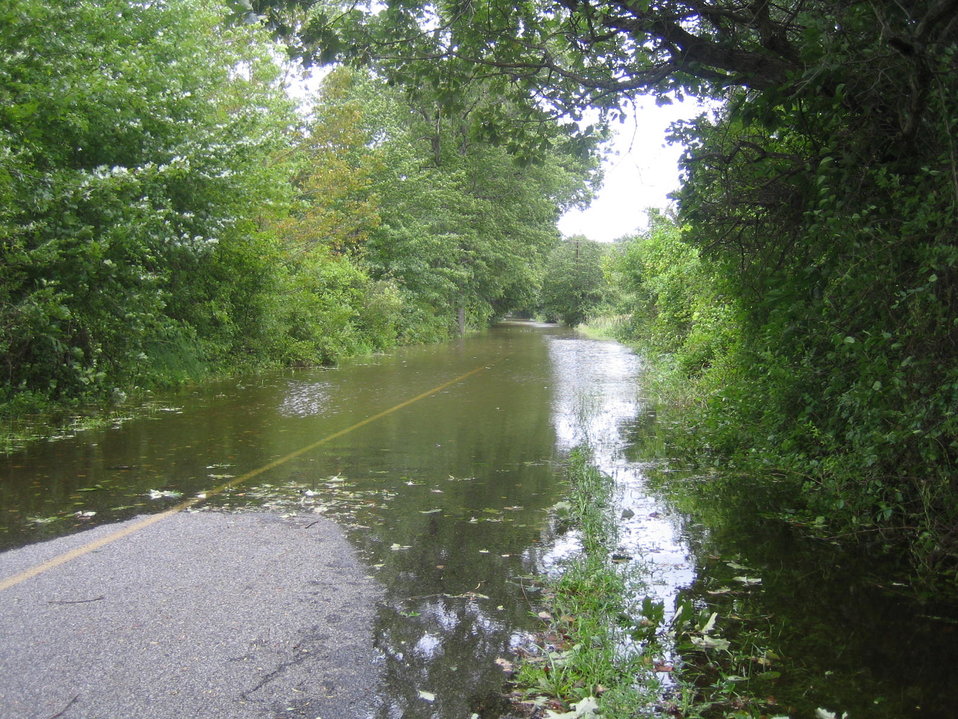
Flooded road at Great Swamp

Flooded road from Hurricane Irene at Great Swamp National Wildlife Refuge in New Jersey.